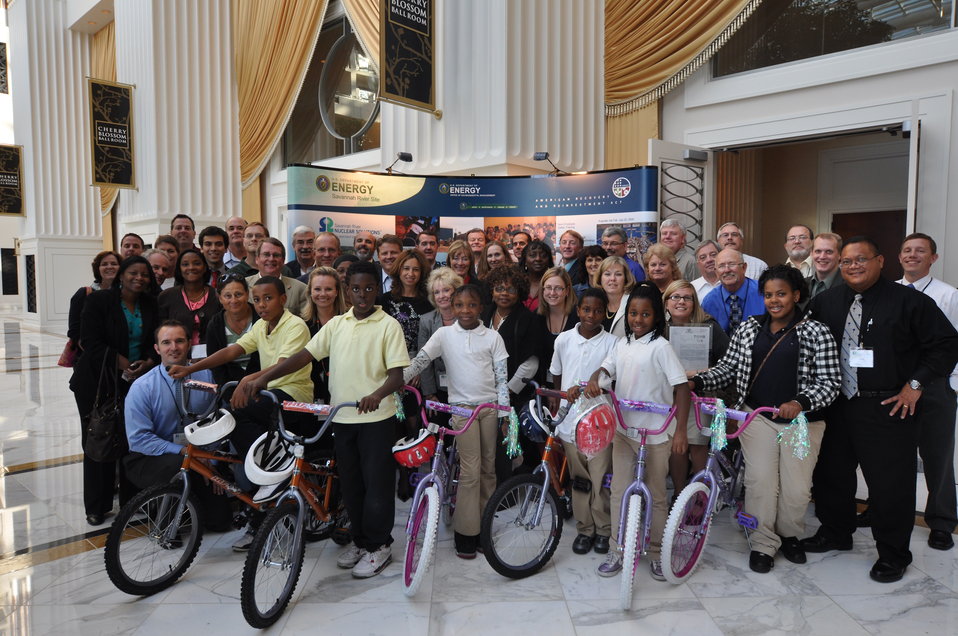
Build A Bike

Information Exchange participants assembled bicycles donation to children in the Boys & Girls Clubs of Greater Washington, who are pictured in the foreground.